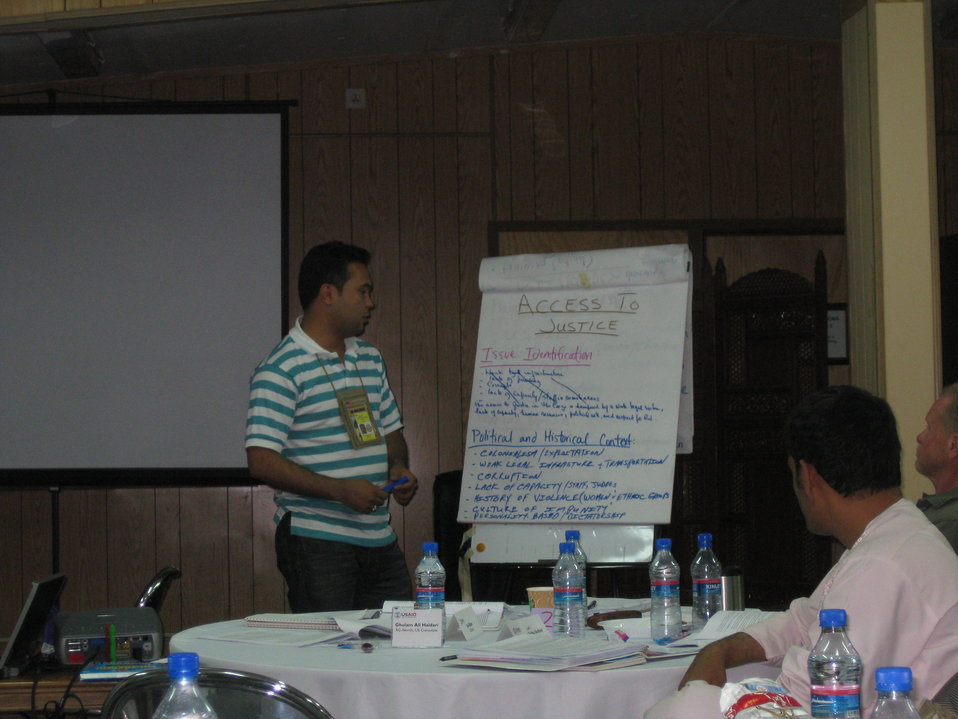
Afghan Youth Voices 032